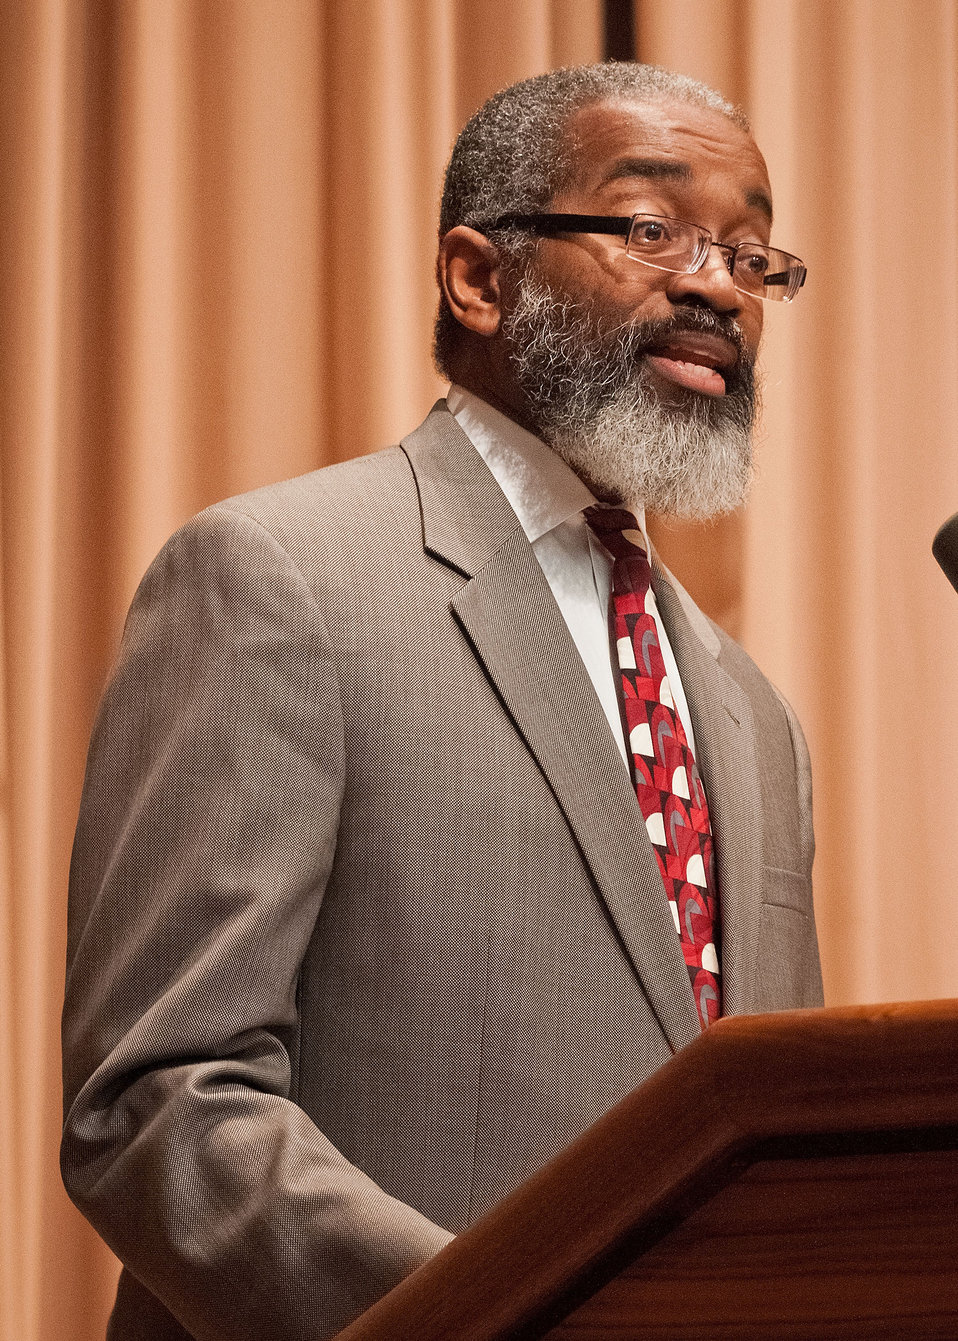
Agriculture Acting Assistant Secretary for Administration Dr. Gregory Parham offers opening remarks at the U.S. Department of Agriculture's (USDA) 2012 National Disability Employment Awareness celebration in the Jefferson Auditorium at USDA in Washington, D.C. on Wednesday, Oct. 17, 2012. The theme for the event was, “A Strong Workforce is an Inclusive Workforce: What Can You Do?